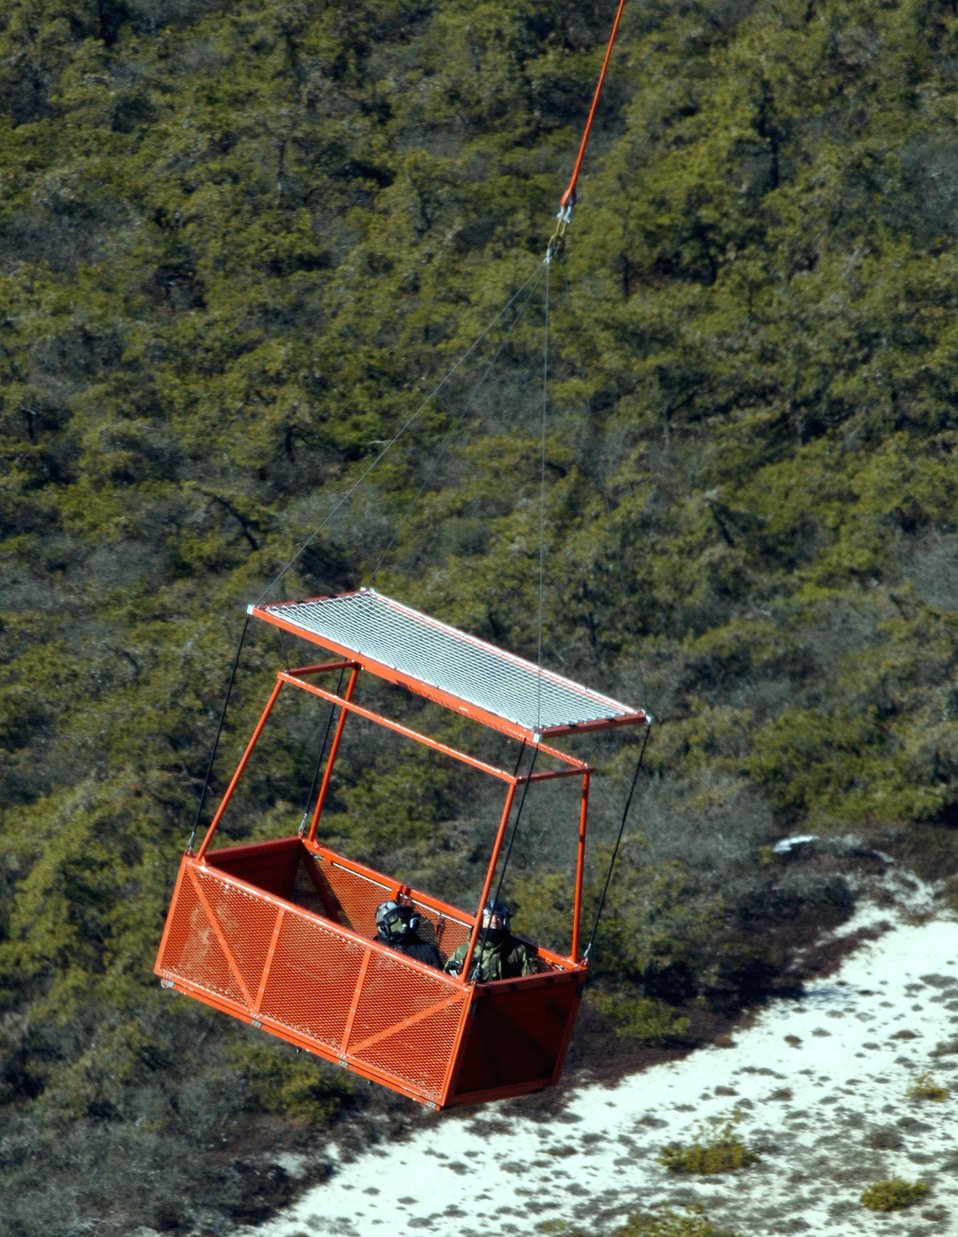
Heli-Basket undergoes testing

An HH-60 Pave Hawk helicopter carries a rescue basket during certification training at Westhampton Beach, N.Y., Tuesday, Feb. 28, 2006. Volunteers from the 106th Rescue Wing at Francis S. Gabreski Field, N.Y., tested the basket so it can be certified for use in rescuing people. It was the first time humans were used in the testing.